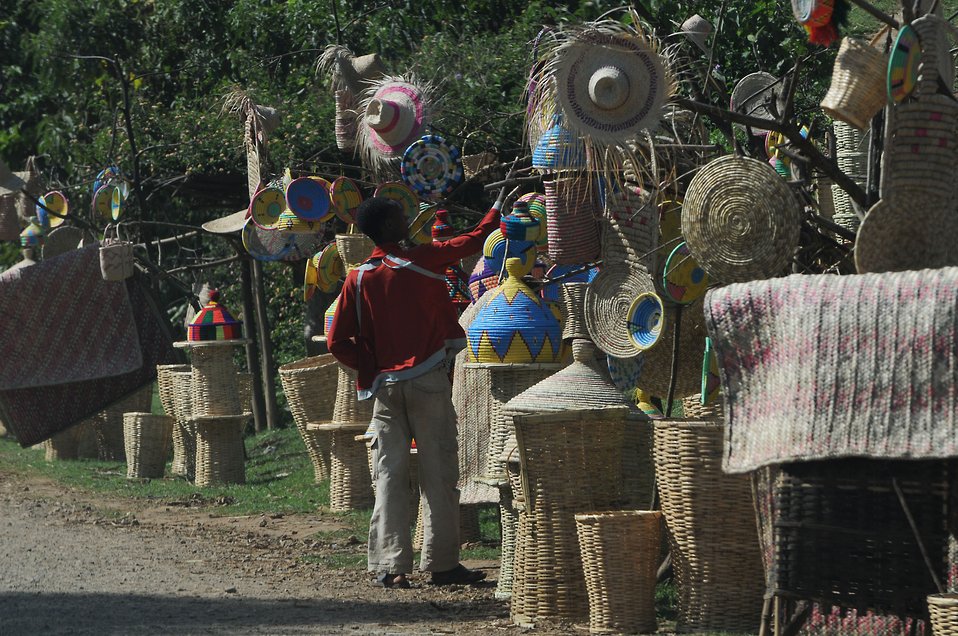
144 hours in Ethiopia: Into the Land of Plenty

A boy looks at handwoven items for sale along the road to Negele Borena, Ethiopia, Dec. 5, 2011. Small markets and bazaars, which feature items from nearby farms and villages, are scattered along the unpaved road.